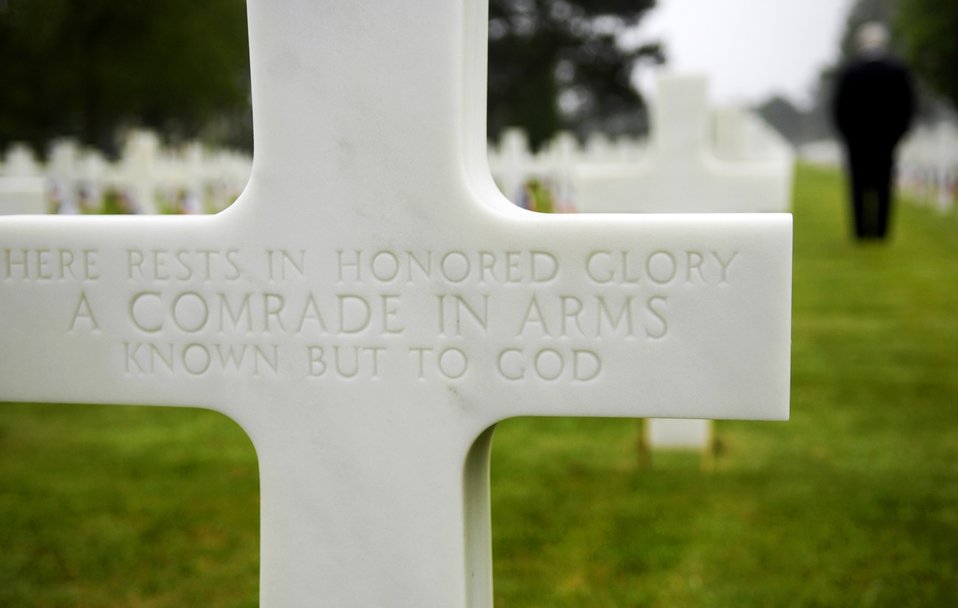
Defense secretary, servicemembers reflect on D-Day heroism

A cross marks the grave site for an unknown Soldier as Secretary of Defense Robert M. Gates tours the American Cemetery during the 63rd Anniversary of D-Day June 6 in Normandy, France.